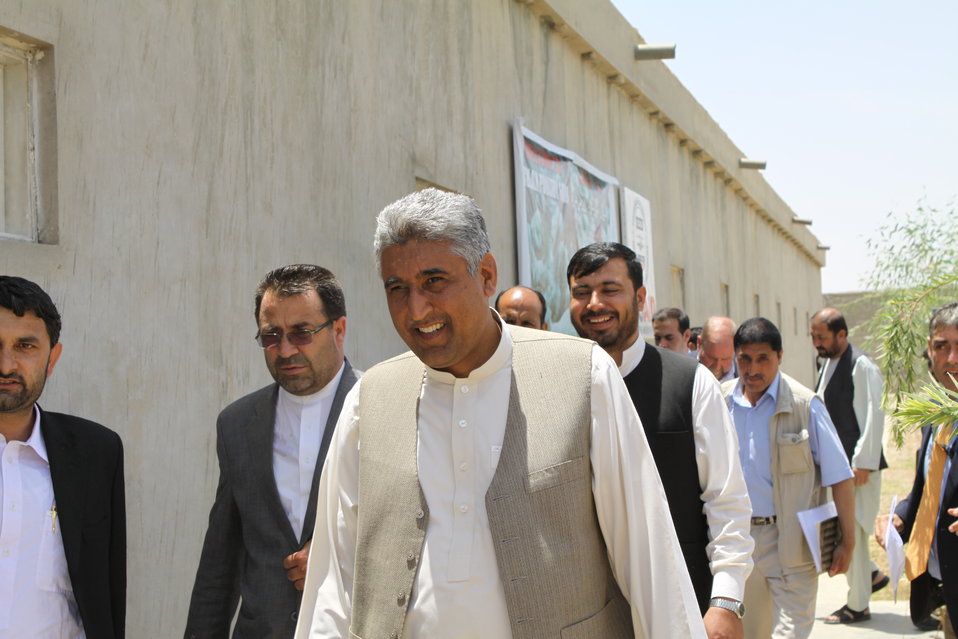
Bolan Poultry Farm